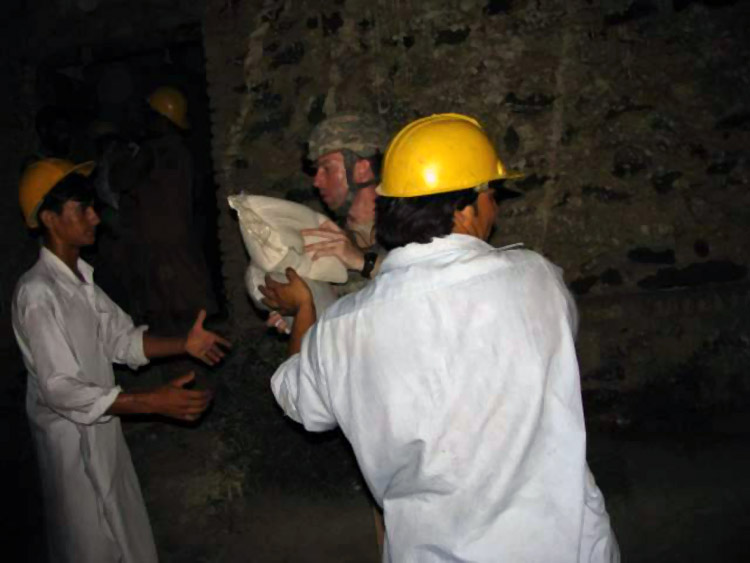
Airmen deliver aid to flood victims in Afghanistan

Capt. John Morash delivers emergency humanitarian assistance supplies July 3 to residents of the Kuz Kunar and Dari Noor districts of Nangarhar Province, Afghanistan. American servicemembers of the Nangarhar Provincial Reconstruction Team pitched in at the request of the United Nations Assistance Mission in Afghanistan after flash floods struck the area June 30. Captain Morash is a Nangarhar Provincial Reconstruction Team member.